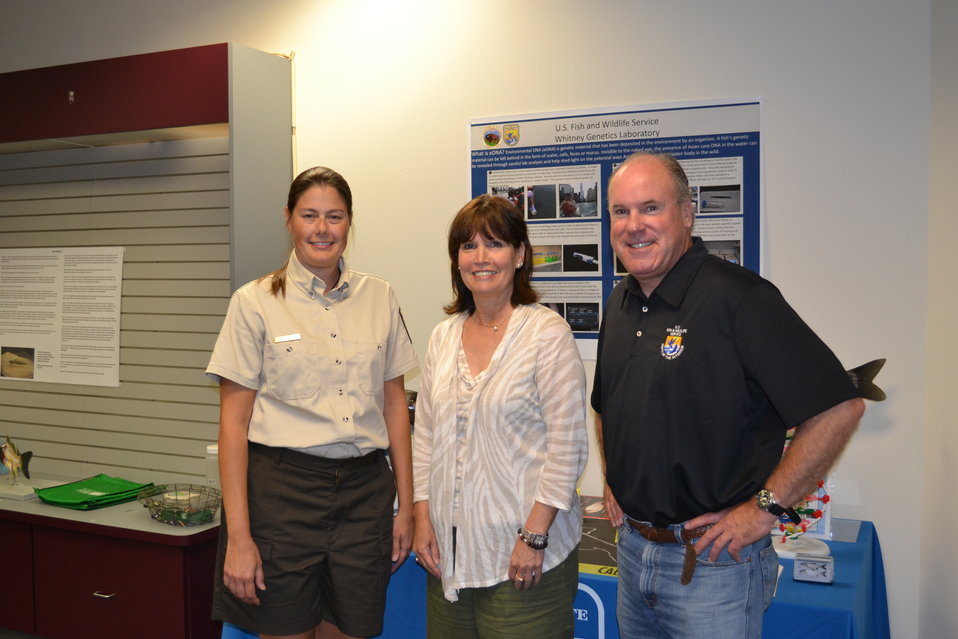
FWS staff with Rep. McCollum

Rep. Betty McCollum poses with U.S. Fish and Wildlife staff: Emy Monroe (geneticist) and Charlie Wooley (Deputy Regional Director).